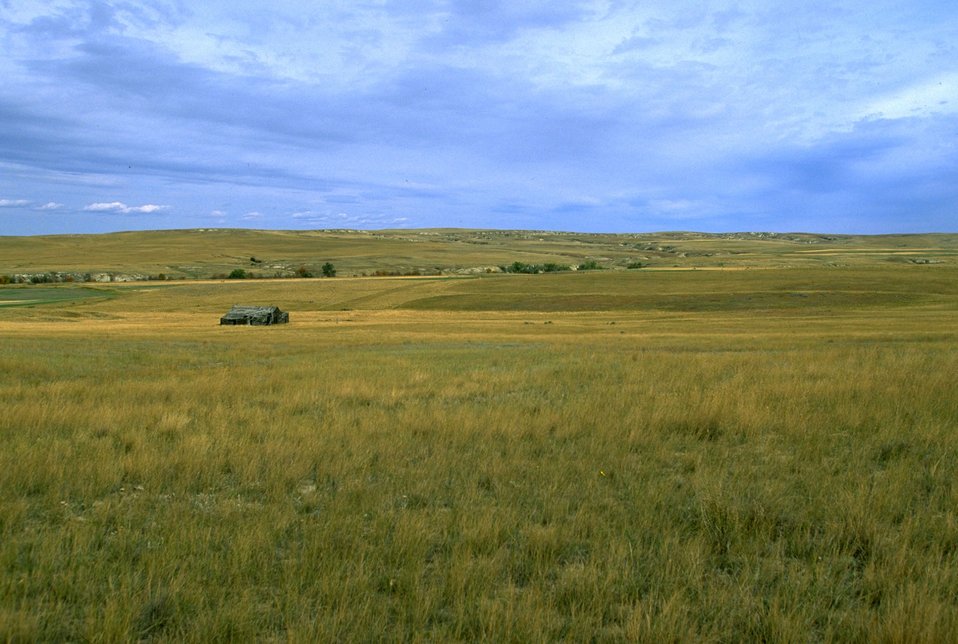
Old Homestead on the eastern Montana prairie